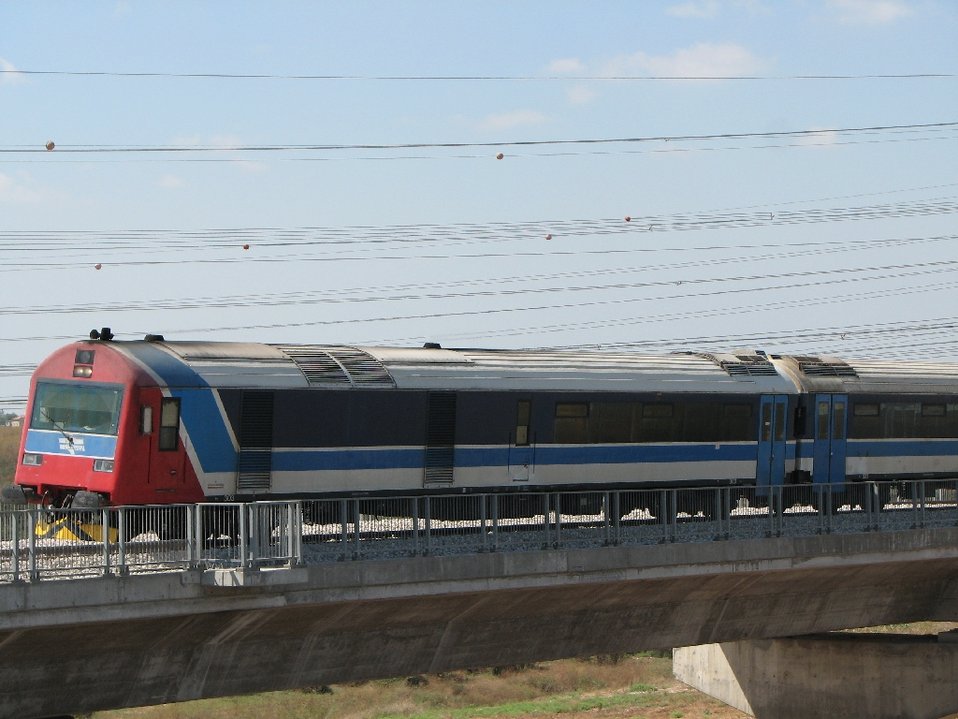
עברית: קרון משולב נוסעים ניהוג וכוח של חברת Alstom.